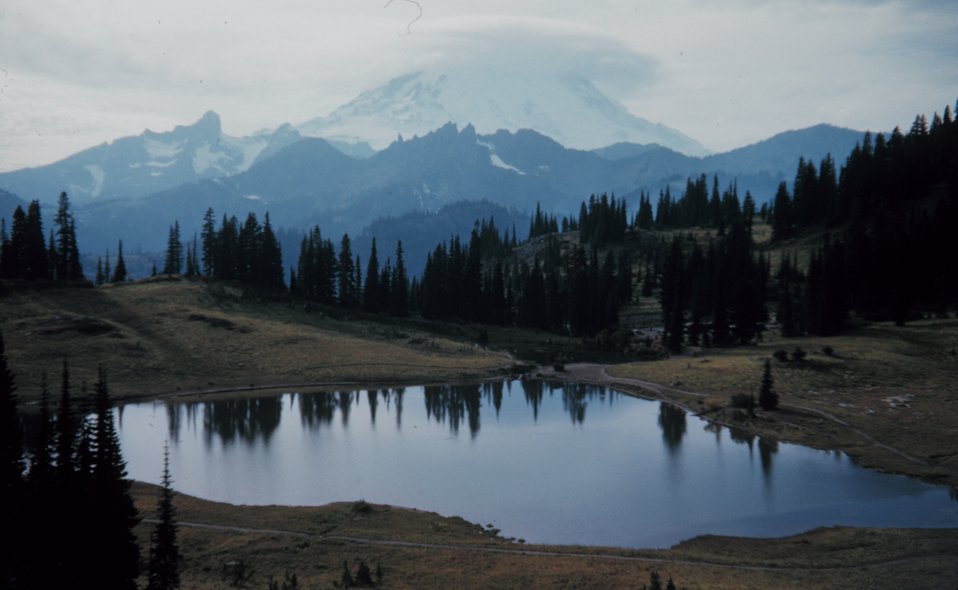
Wave cloud over Mount Rainier